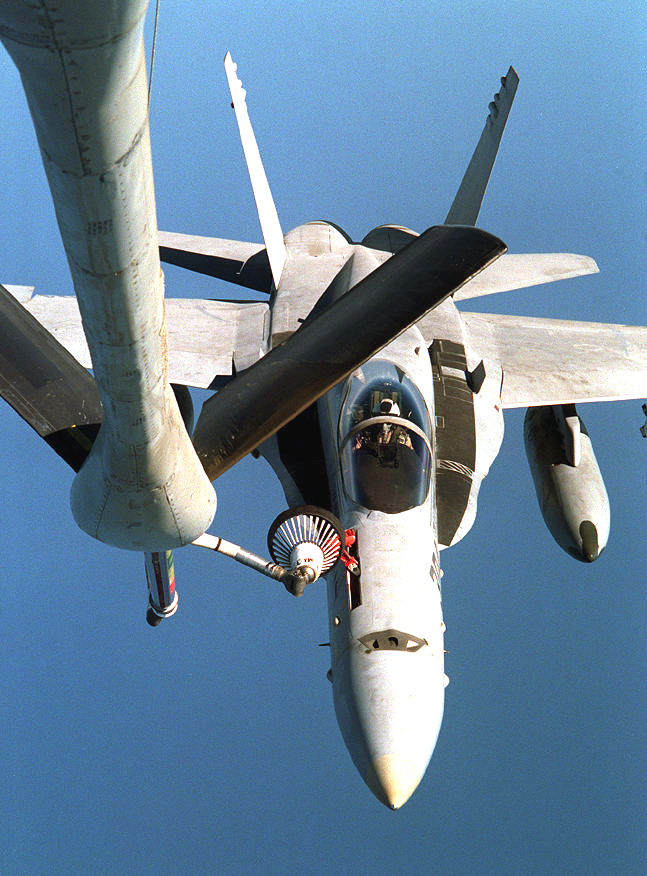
Gas and go

A KC-135 Stratotanker assigned to the 380th Air Expeditionary Wing refuels an F/A-18 Super Hornet recently. The 380th AEW is the largest air refueling unit in the Middle East and comprises KC-135s and KC-10 Extenders.